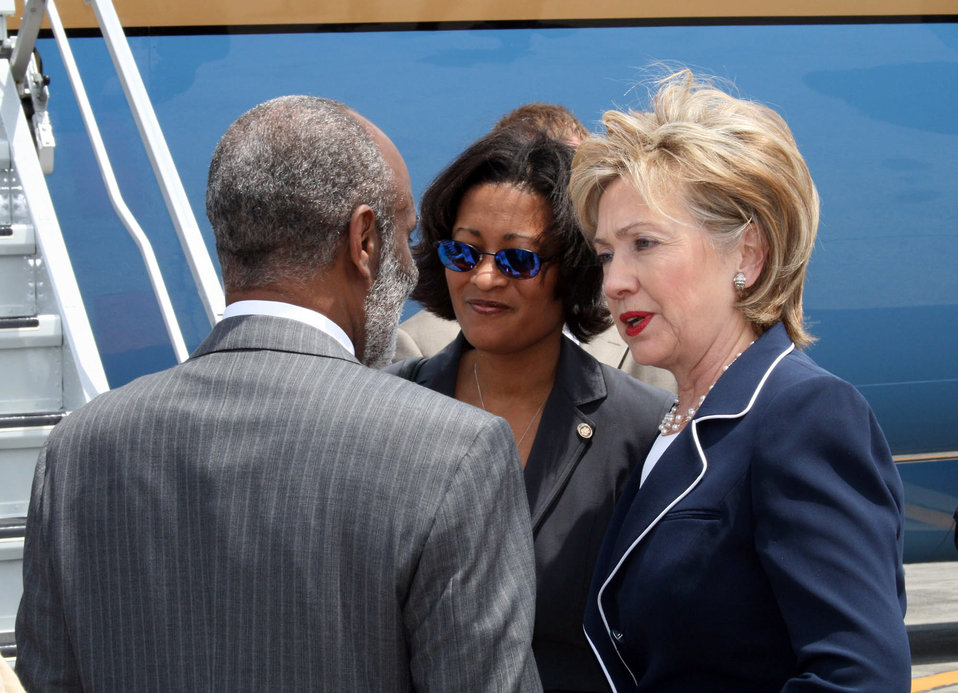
Secretary Clinton Arrives in Haiti

Haitian President Rene Preval greets U.S. Secretary of State Hillary Rodham Clinton at the Toussaint Louverture International Airport in Port-au-Prince, Haiti, April 16, 2009.